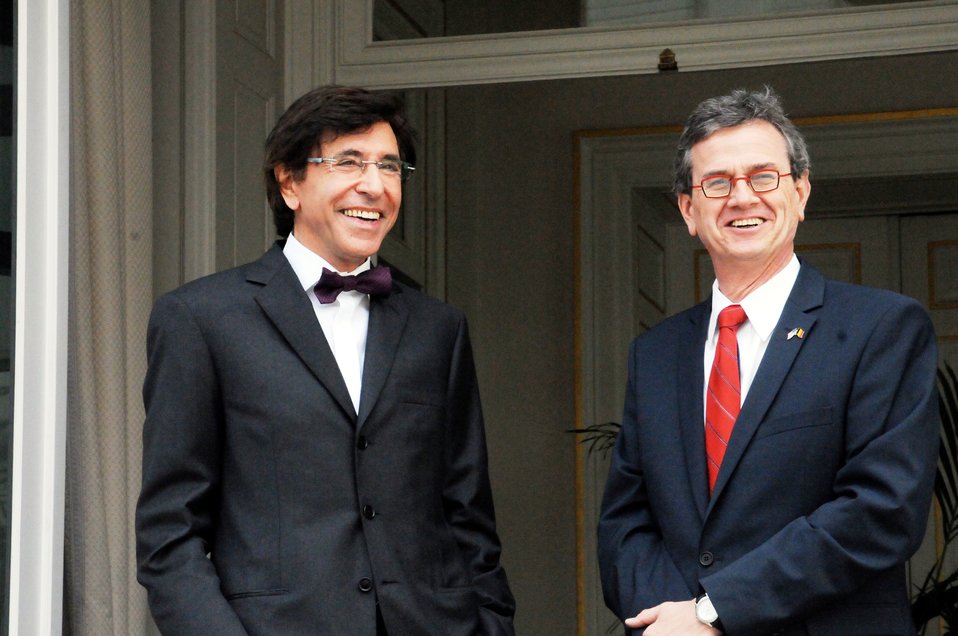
Ambassador Gutman and Belgian Prime Minister Di Rupo Prepare To Welcome Secretary Clinton

U.S. Ambassador to Brussels Howard Gutman, right, and Belgian Prime Minister Elio Di Rupo, left, prepare to greet U.S. Secretary of State Hillary Rodham Clinton at the Prime Minister's residence in Brussels, Belgium, on April 18, 2012.